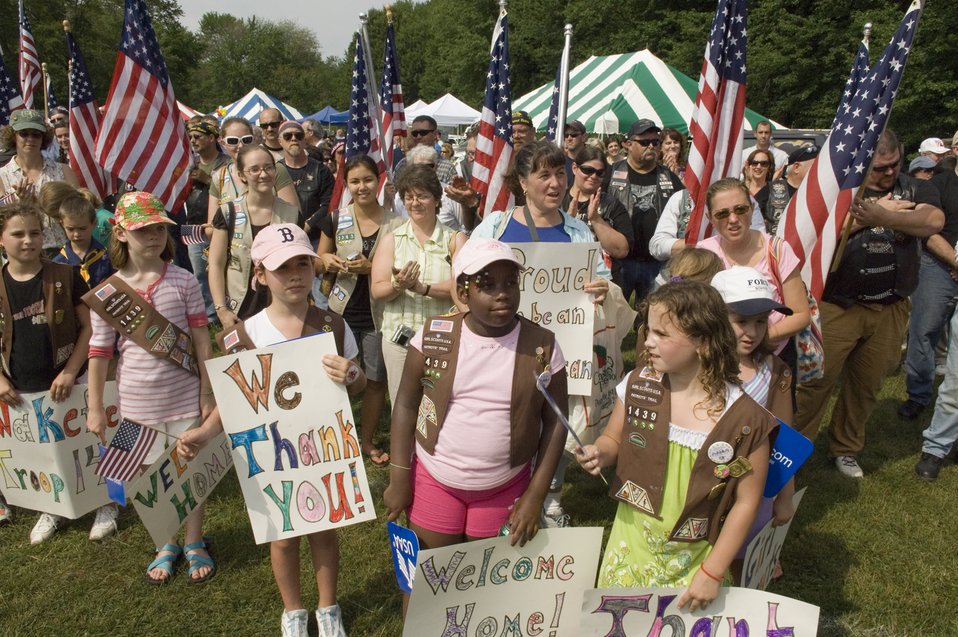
Heroes homecoming

Girl Scouts from across eastern Massachusetts welcome home more than 50 base Airmen June 27 at Hanscom Air Force Base, Mass. The gathering was part of a Heroes' Homecoming celebration. Earlier this year, hundreds of Girl Scouts came to Hanscom AFB to deliver more than 10,000 boxes of Girl Scout cookies that were sent to deployed military members around the world.